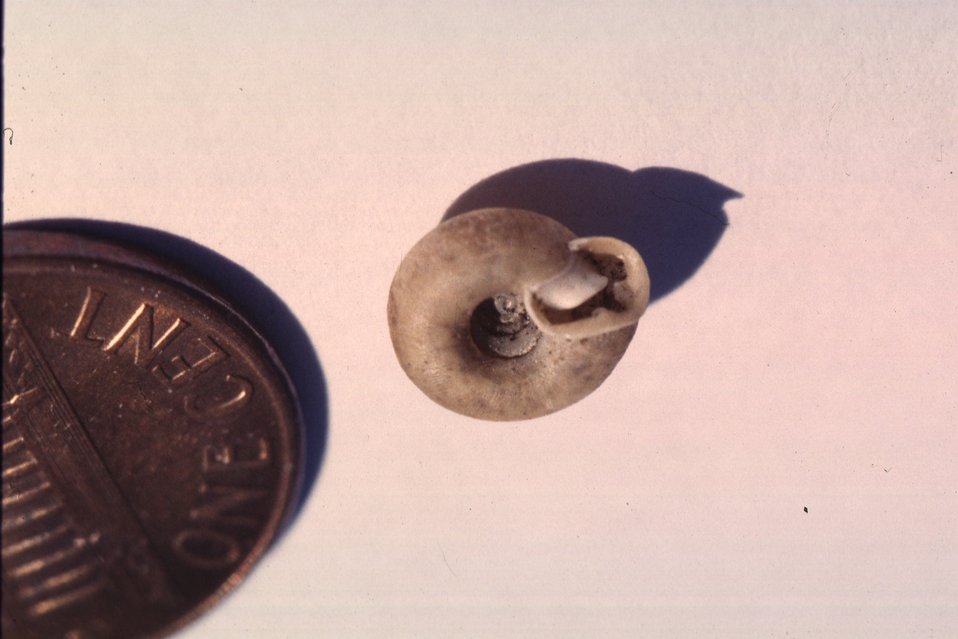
Shasta chaparral (Trilobopsis roperi).